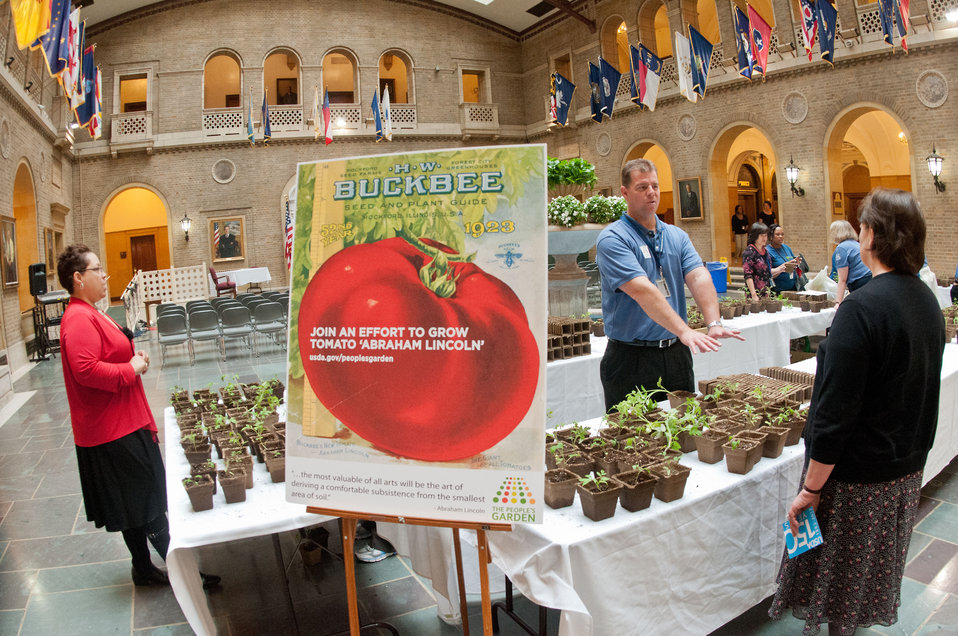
Agriculture's Farm Service Agency volunteer Executive Master Gardener Martin Bomar, talks with fellow employees about the joys and caring of ‘Abraham Lincoln” Tomato seedlings that the People’s Garden Initiative is distributing to USDA employees in celebration of the 150th Anniversary of the U.S. Department of Agriculture, on Tuesday, May 15, 2012 in Washington, D.C., on this day, 150 years ago, President Abraham signed the Department into existence during the Civil War. In 1923 the H.W. Buckbee seed company of Rockford, Illinois introduced an heirloom variety named in honor of Illinois’ Greatest Son – Abraham Lincoln. The plant produces large beefsteak tomatoes in about 90 days. Volunteer Executive Master Gardeners planted and cultivated more that 3,000 seedlings ranging in size from one inch to more than a foot tall, so people could choose the best ones to transport home and to stagger the harvest by selecting a small and large seedling. One of the hopes of this event is to share the joys of gardening and harvesting, as well as the opportunity to share your harvest in your community. Seed packets are being distributed to People’s Gardens worldwide.